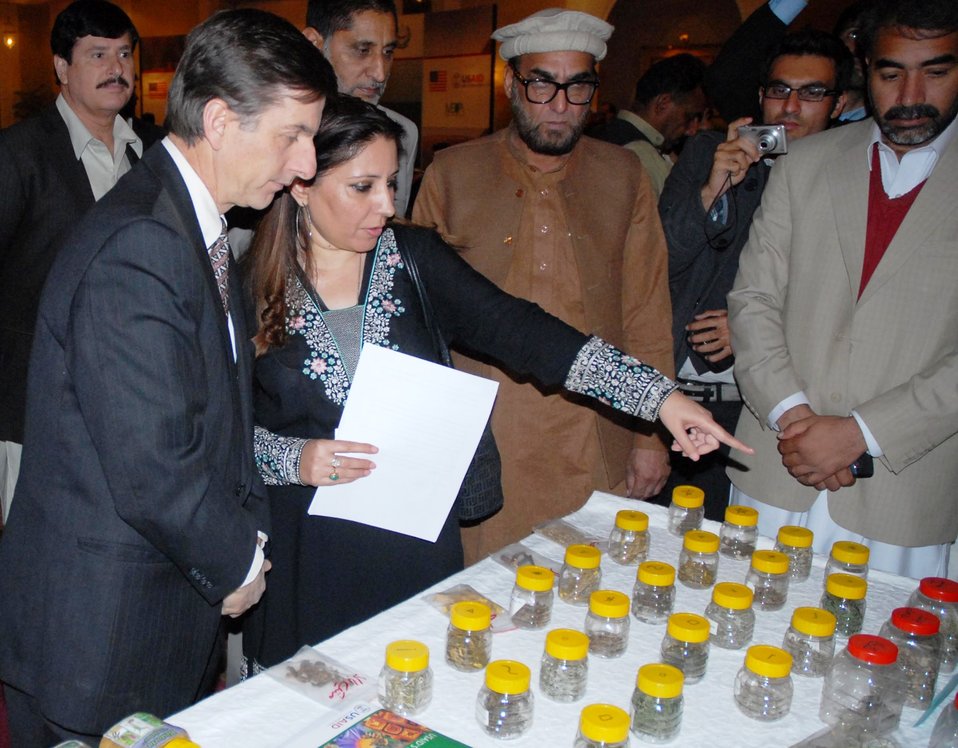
Industry Conference on Medicinal and Aromatic Plants and Honey

December 14, 2011- USAID Mission Director, Andrew Sisson while visiting project stalls and talking with beneficiaries at the USAID sponsored Industry Conference on Medicinal and Aromatic Plants organized by Entrepreneurs project.